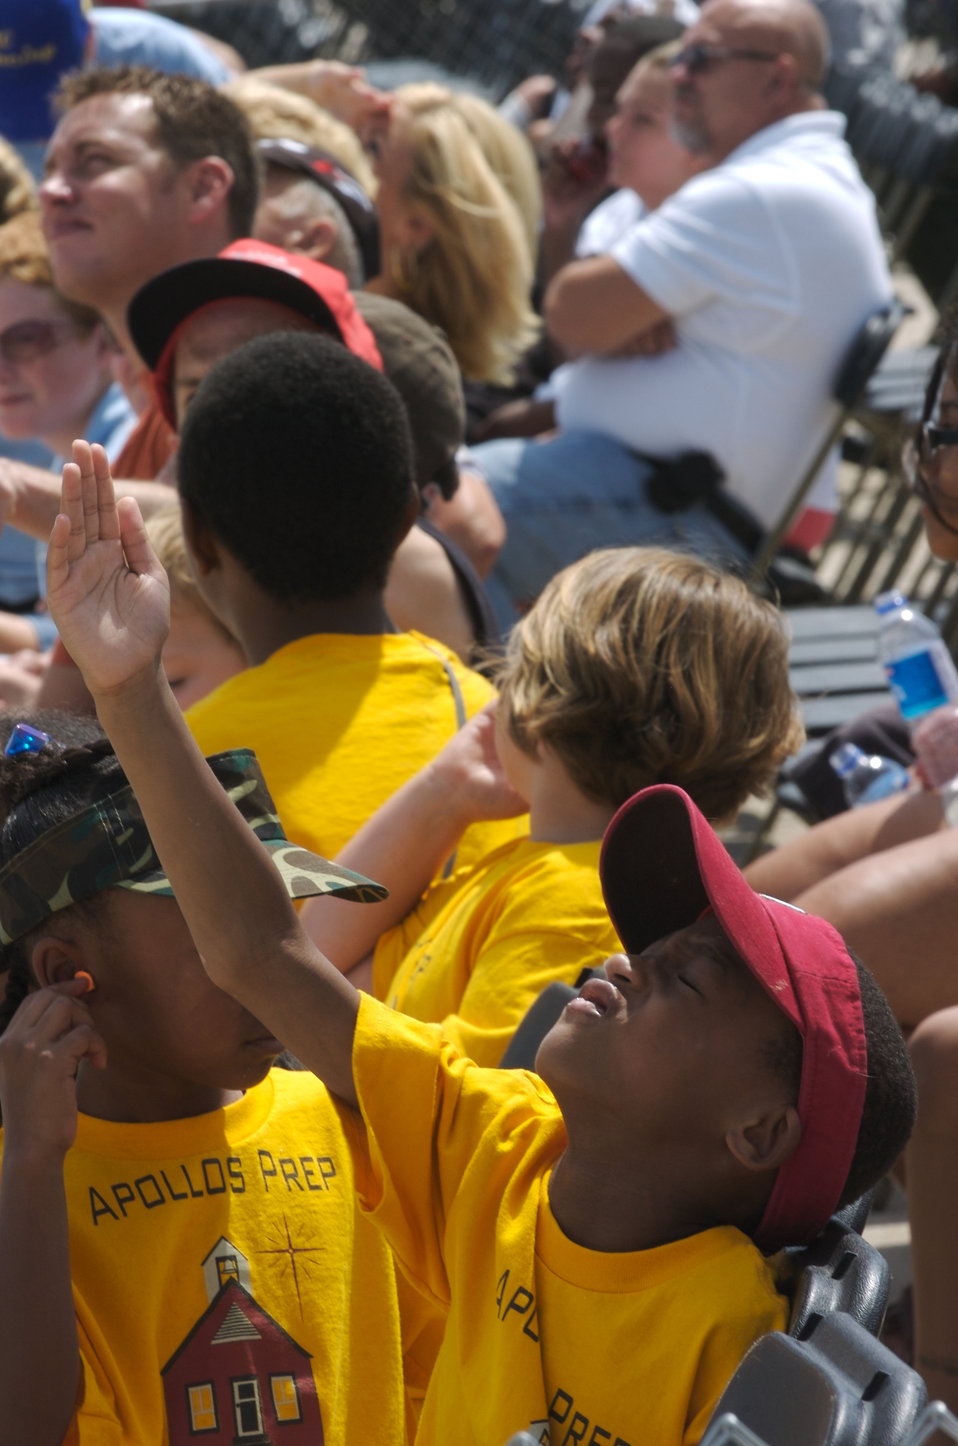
Offutt Airmen hold airshow

Children and special needs visitors watch a complete airshow Aug. 15 at Offutt Air Force Base, Neb.